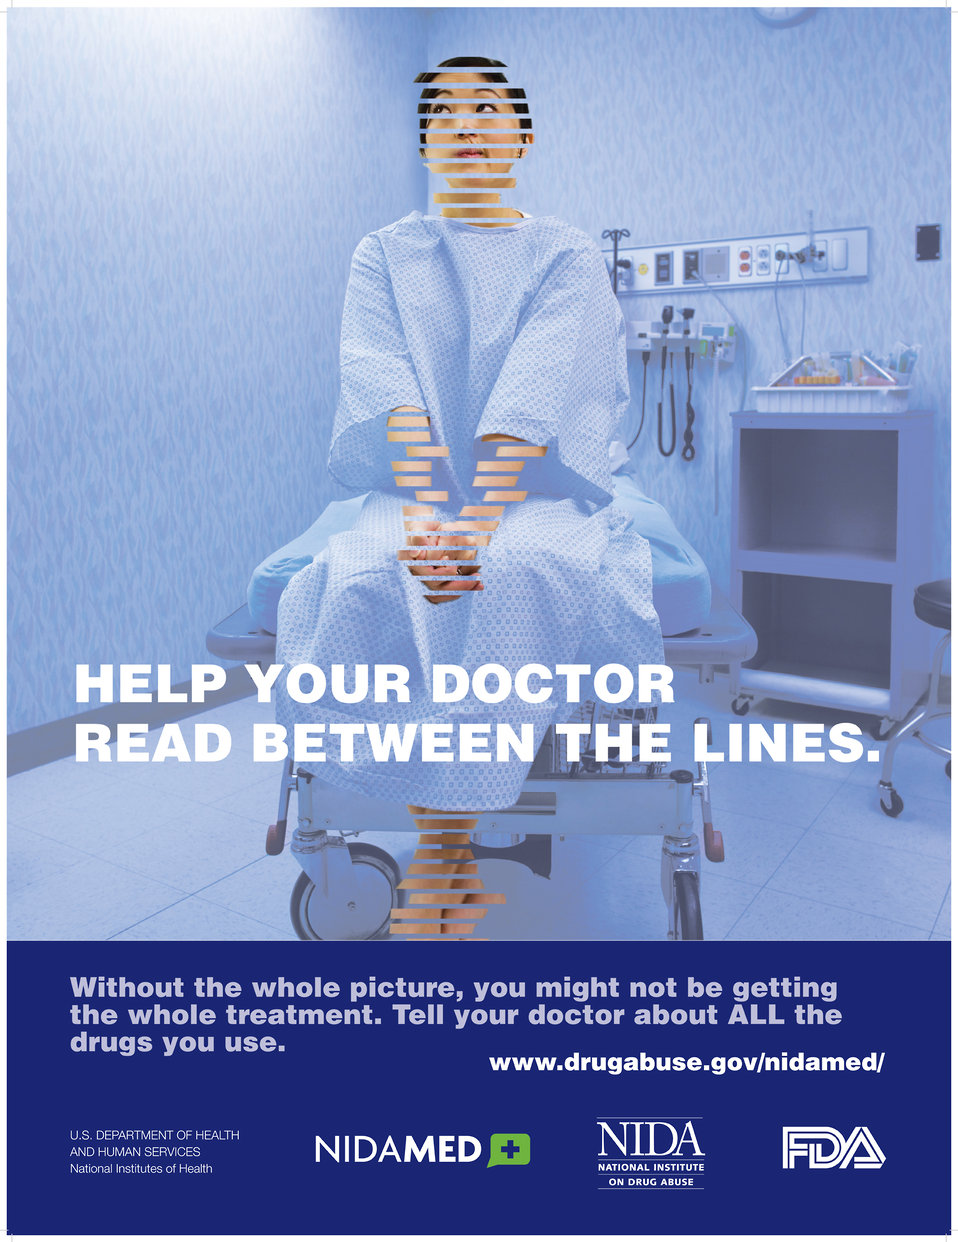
NIDAMED poster